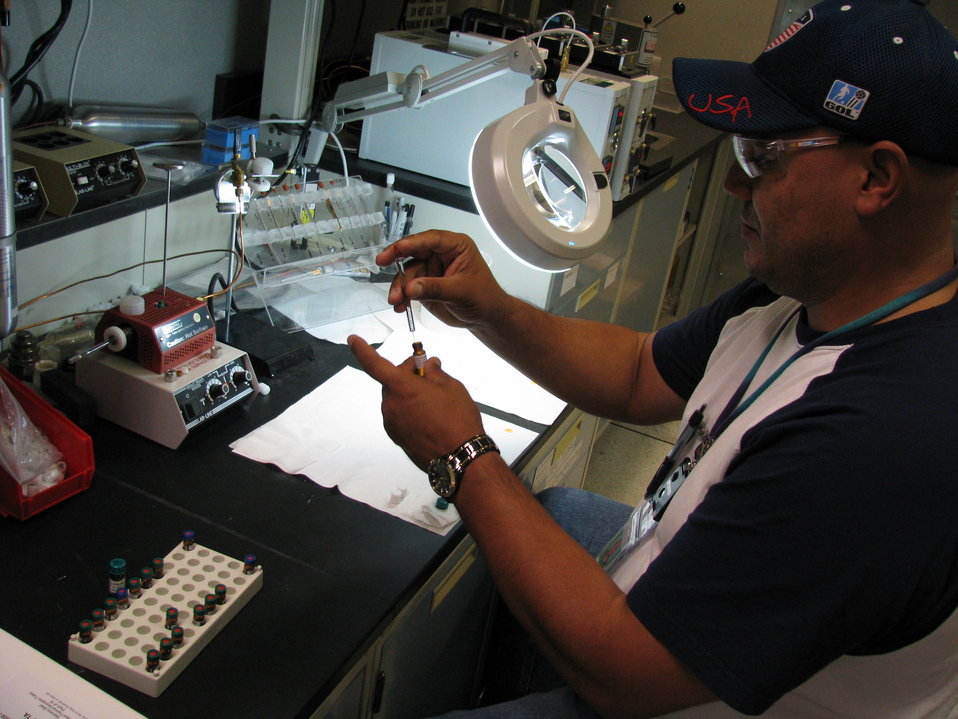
222-S inside lab